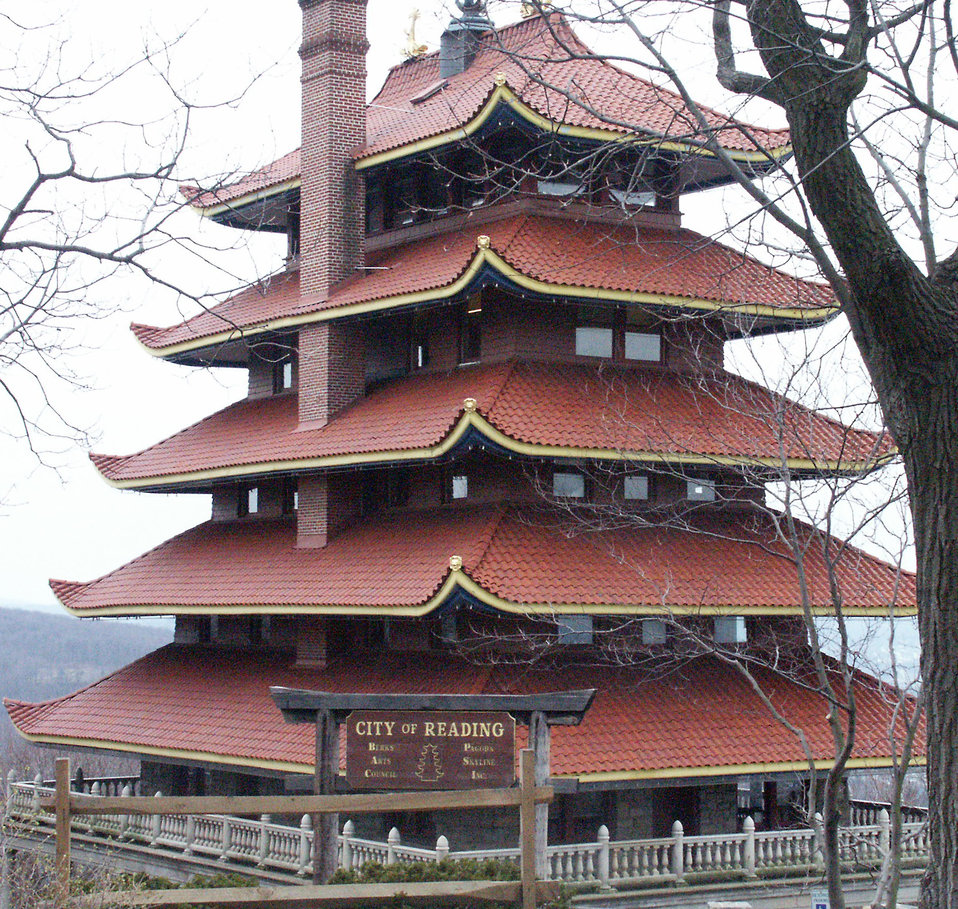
Pagoda Reading PA USA